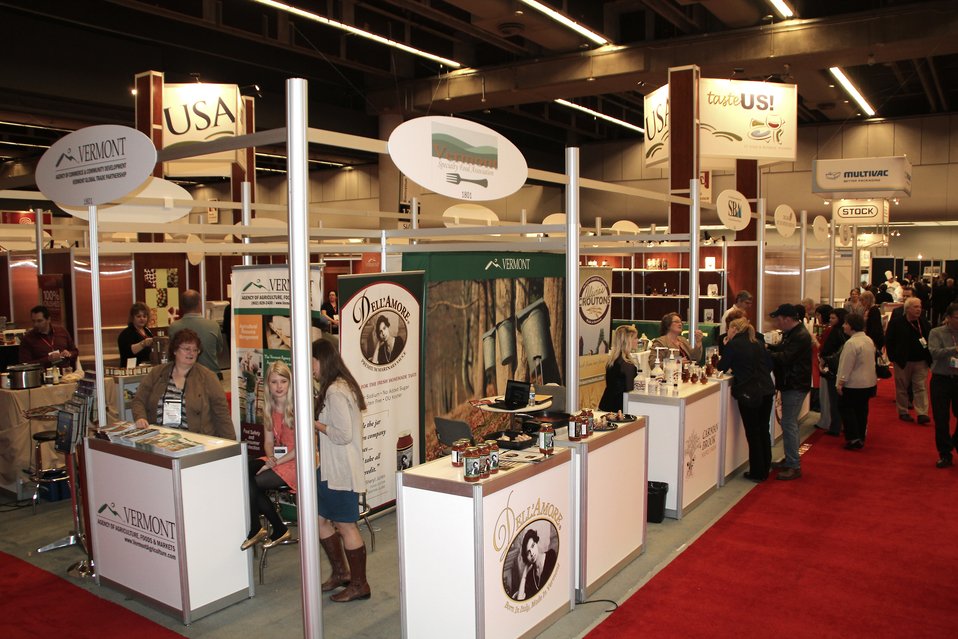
Vermont1

The U.S. Department of Agriculture (USDA) Foreign Agriculture Service (FAS) helped Vermont specialty food companies break into the Canadian market at the recent 2012 Salon International de l'alimentation (SIAL) in Montreal, Canada on May 12, 2012.USDA photo.